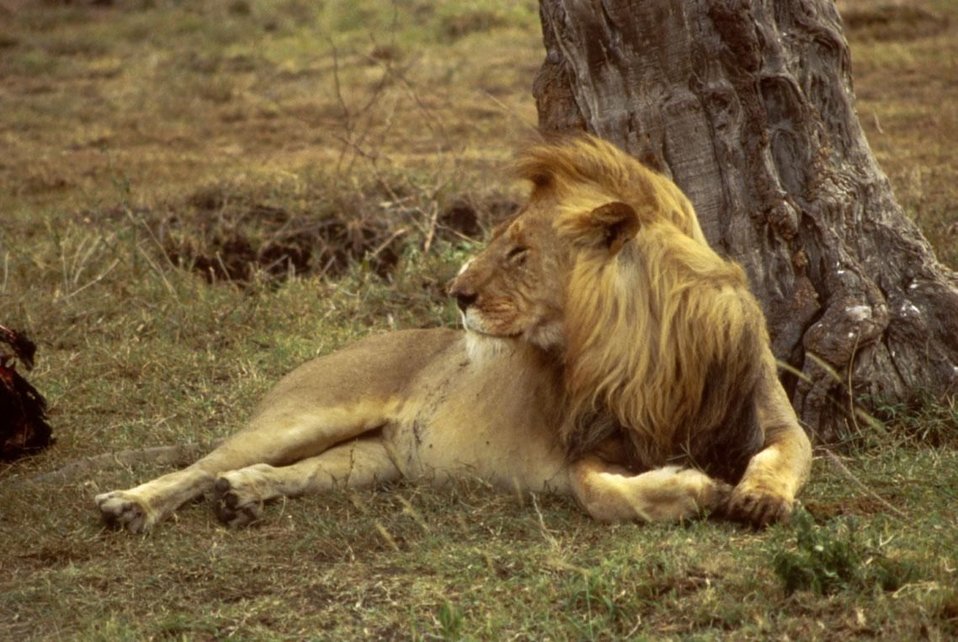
English:
Image title: African lion hd Image from Public domain images website, http://www.public-domain-image.com/full-image/fauna-animals-public-domain-images-pictures/lion-public-domain-images-pictures/african-lion-hd.jpg.html